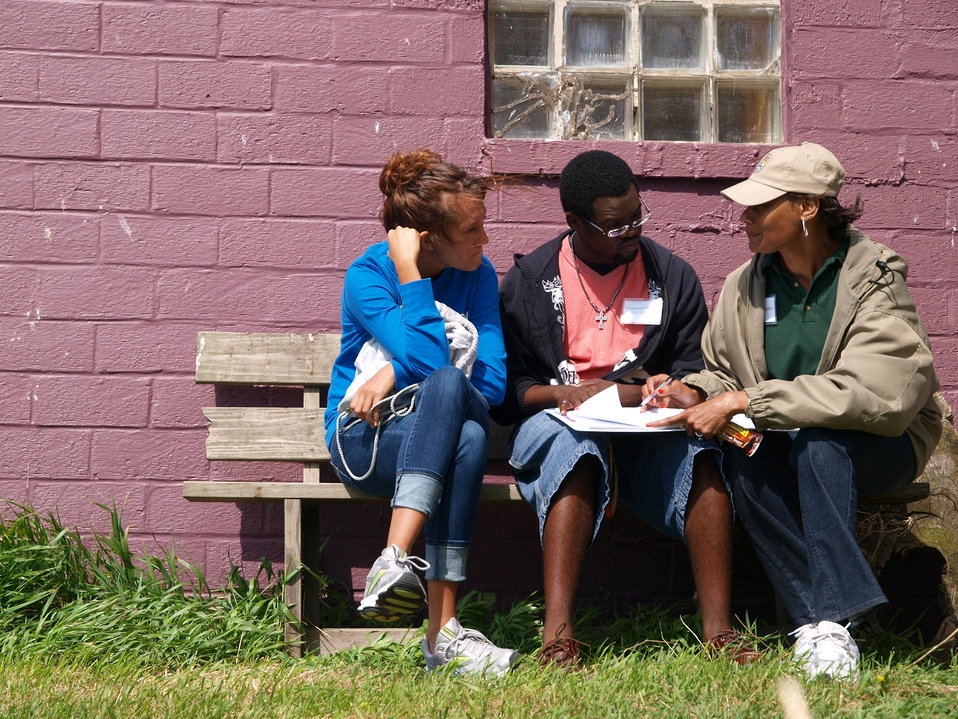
CDIP 2012 Fergus Falls

Reneiase and mentees - Emannuel and Samantha